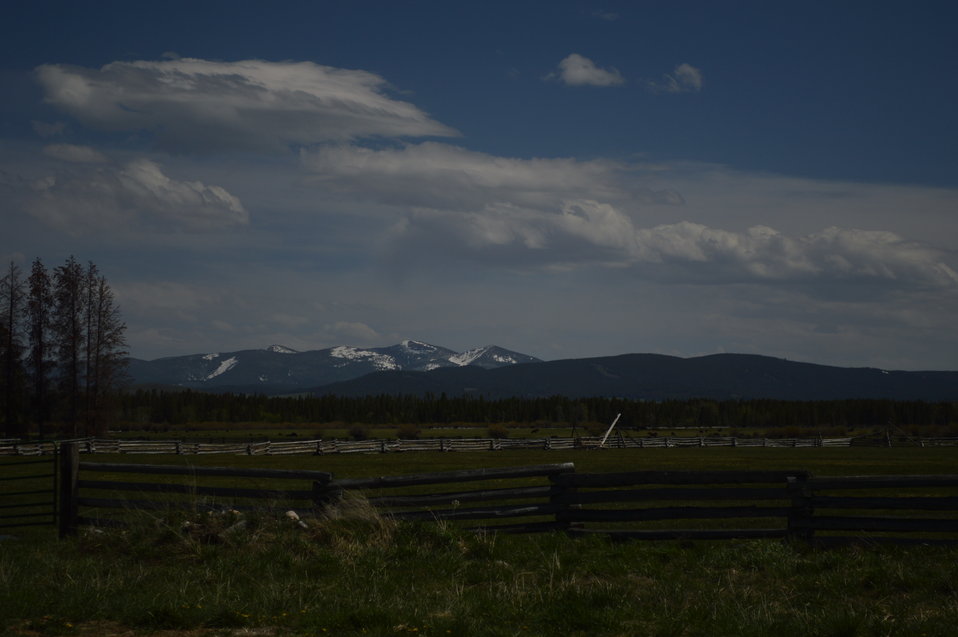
Regional Leadership Visit to Montana 2014